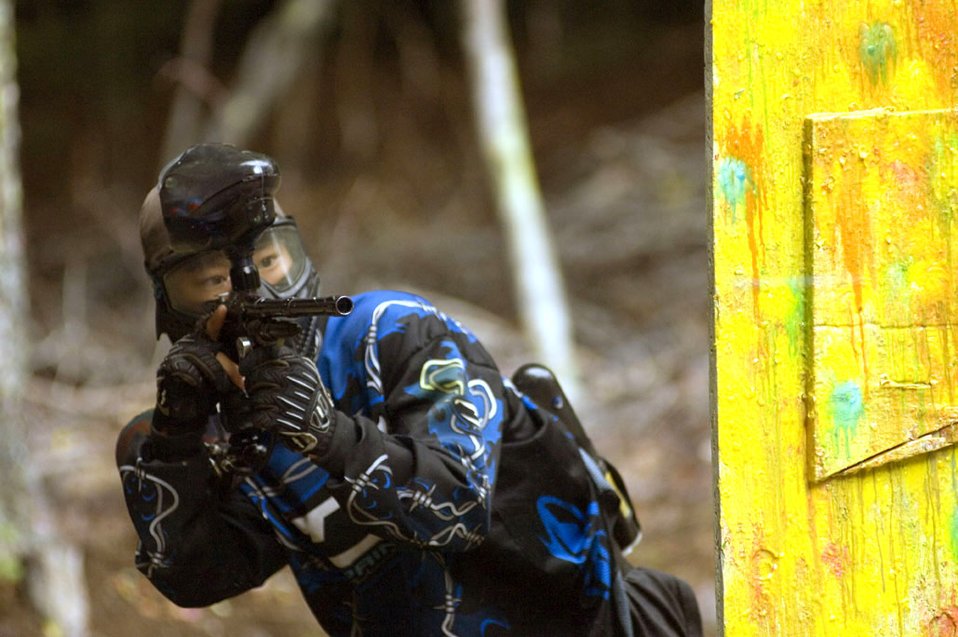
Paint 'em up

PULASKI BARRACKS, Germany -- A paintballer leans out from behind an obstacle and takes aim during the first speedball tournament here. Two three-person teams competed against each other from opposite ends of an enclosed area during a three-minute contest. Fifteen American and German teams participated in the competition.